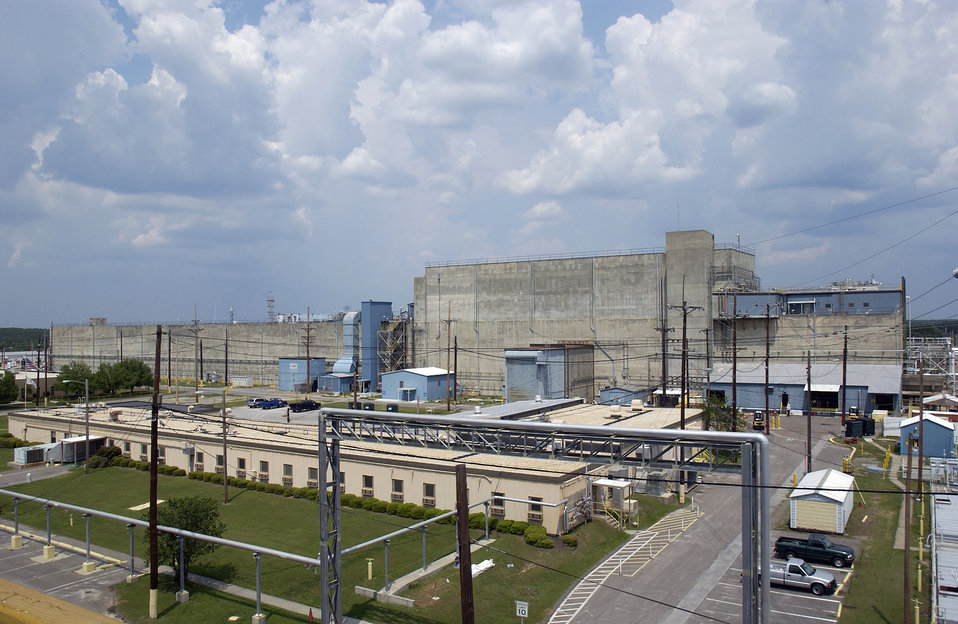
SRS H Canyon

H Canyon, above, and HB-Line are scheduled to soon begin dissolving and purifying plutonium currently stored at the Savannah River Site to demonstrate the capability to produce oxide material that meets the Mixed Oxide Facility (MOX) feedstock specifications. The production process at MOX, which is now under construction, will eventually create fuel pellets for U.S. commercial reactor fuel assemblies.